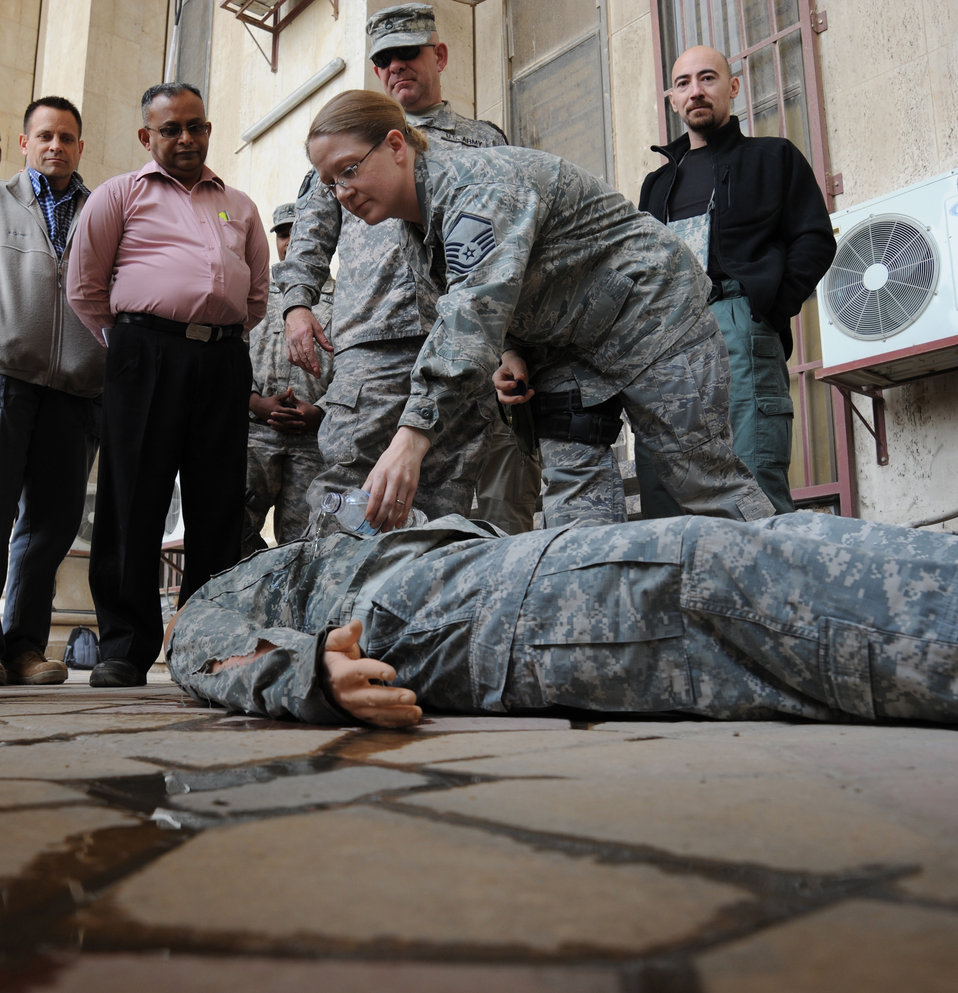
Air Force and Army jointly save lives

Master Sgt. Krystal Marks demonstrates what five liters of blood might look like on a bleeding victim during the combat lifesaver course Dec. 29, 2009, at Baghdad, Iraq. The students learned to check patients for any visible signs of blood loss during initial assessment. Sergeant Marks is an aerospace medicine technician with U.S. Forces-Iraq, Deputy Commanding General-Advising and Training Health Affairs.